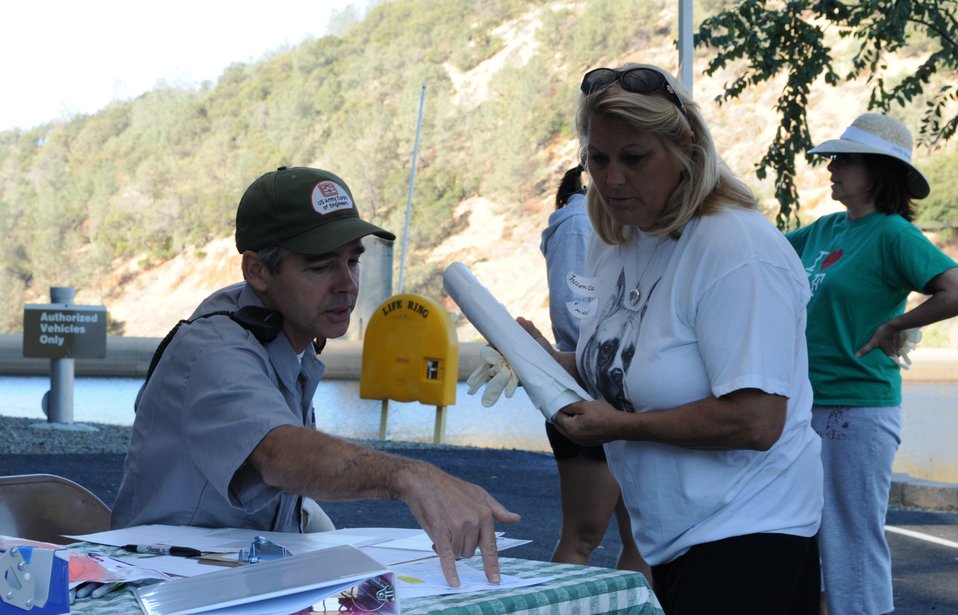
ENGLEBRIGHT LAKE, Calif. (Sept. 25, 2010) -- U.S. Army Corps of Engineers Sacramento District park ranger Tom Bookholtz (left) points out the location of a cleanup for a volunteer here during the 17th annual National Public Lands Day Sept. 25 Park rangers from the U.S. Army Corps of Engineers Sacramento District and more than 55 volunteers celebrated the day with cleanup efforts at the park. The Corps has been involved with National Public Lands Day since its inception in 1994 and has consistently been one of the largest providers of sites and volunteers participating in the event. This year, the celebration coincides with California Coastal Cleanup Day and President Barack Obama’s America’s Great Outdoors Initiative, an effort to promote the conservation of outdoor spaces and reconnect Americans to the outdoors.